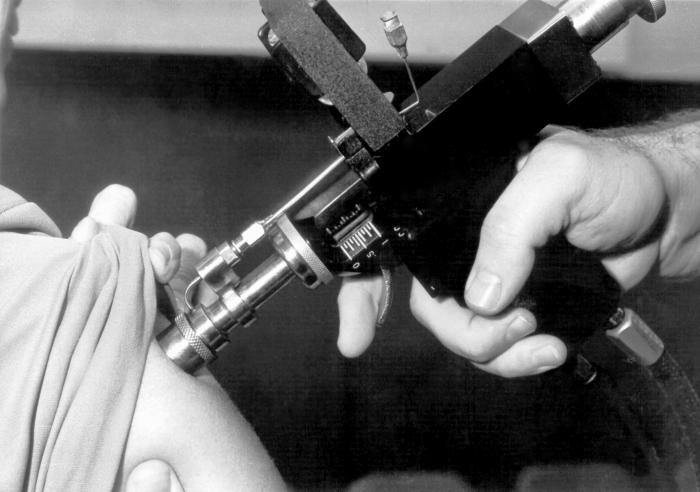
Immunization

This photograph shows a clinician using a jet injector gun during an adult immunization program.